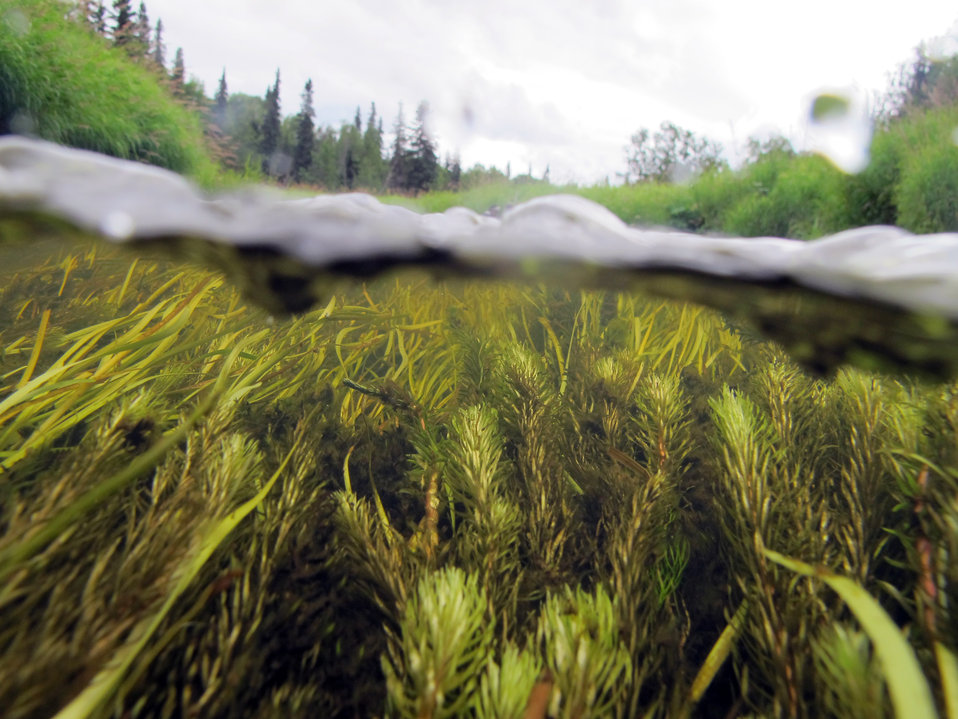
Underwater forest

Native aquatic vegetation (mare's tail and sparganium) creates cover for juvenile salmon inhabiting Rabideux Creek (a tributary to the Susitna River) near Talkeetna, Alaska. USFWS/K.Mueller